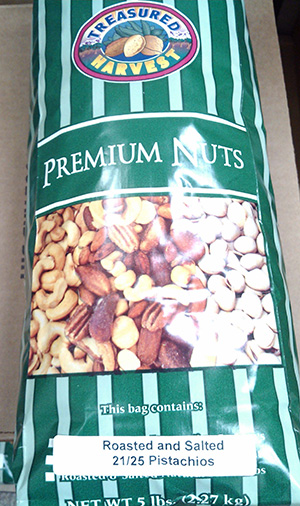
RECALLED – Roasted and Salted Pistachios

July 10, 2013 – Product Recall – Western Mixers Produce & Nuts, Inc. Recalls Pistachios Because of Possible Health Risk.